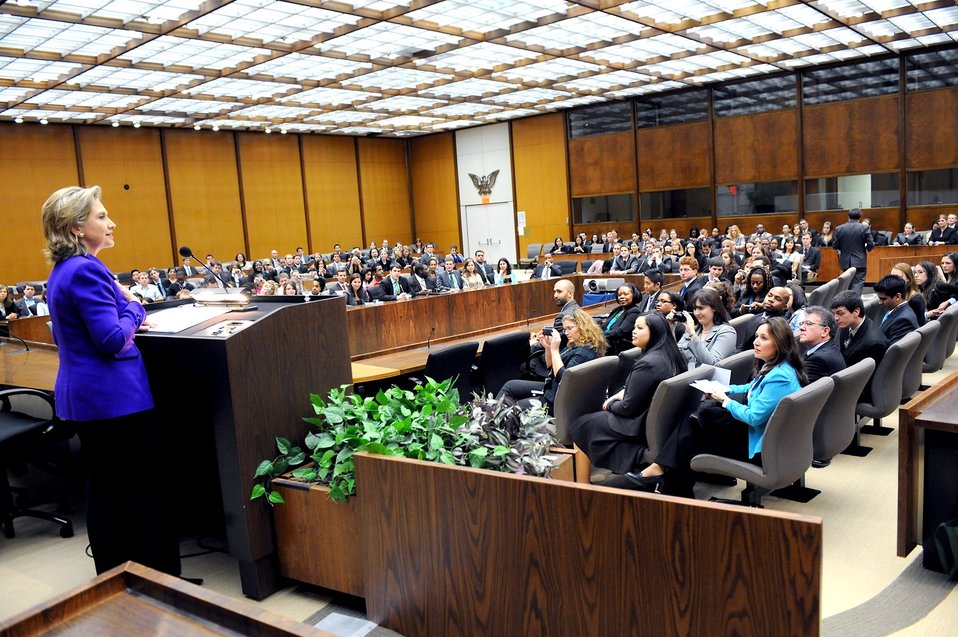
Secretary Clinton Addresses Spring Interns

U.S. Secretary of State Hillary Rodham Clinton addresses U.S. Department of State Spring Interns, Stay-in-school and Co-op Students, Civil Service Career Entry Professionals, and Presidential Management Fellows at the U.S. Department of State, Washington, DC, March 26, 2010.